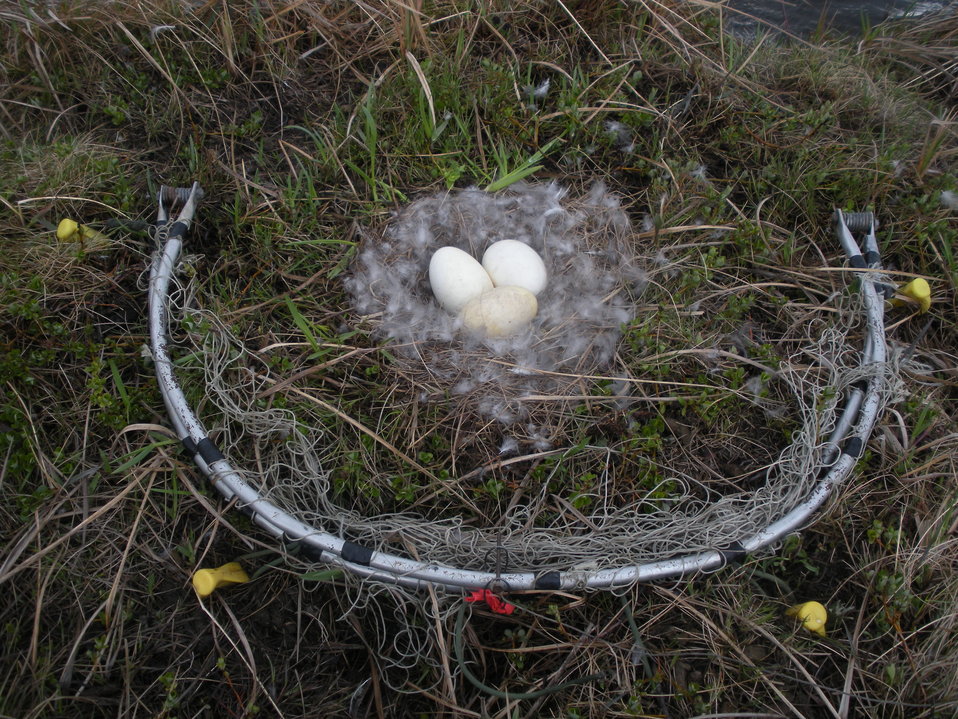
Bow-trap

A color marking study was initiated on Kigigak island in the early 1990's to provide estimates of spectacled eider demographic parameters. These parameters were used to develop a population model for the species. Female spectacled eiders are captured and marked with a USFWS metal band, a uniquely coded tarsal band, and a uniquely coded nasal disc. These markers are used to identify the females in subsequent years and provide information about survival and recruitment which can be used in the population model. One method of trapping the female spectacled eiders is to use a bow-trap which is placed over the nest. This method has also been used to capture Pacific Black Brant, Emperor Geese, Cackling Geese, and Common Eiders. In this photo a bow trap has been placed over a goose nest.

USFWS Yukon Delta NWR